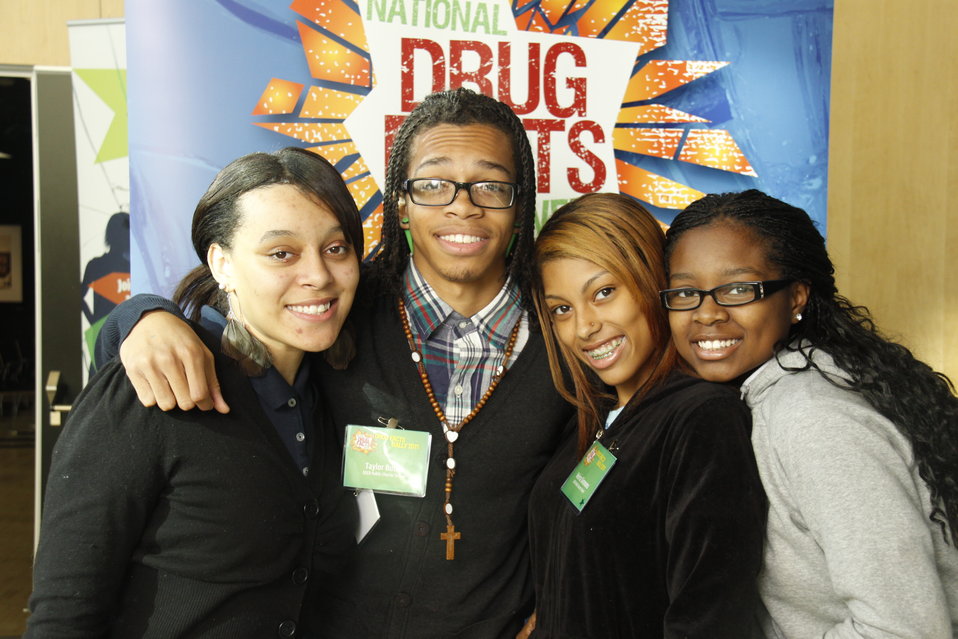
NDFW Mentor Event